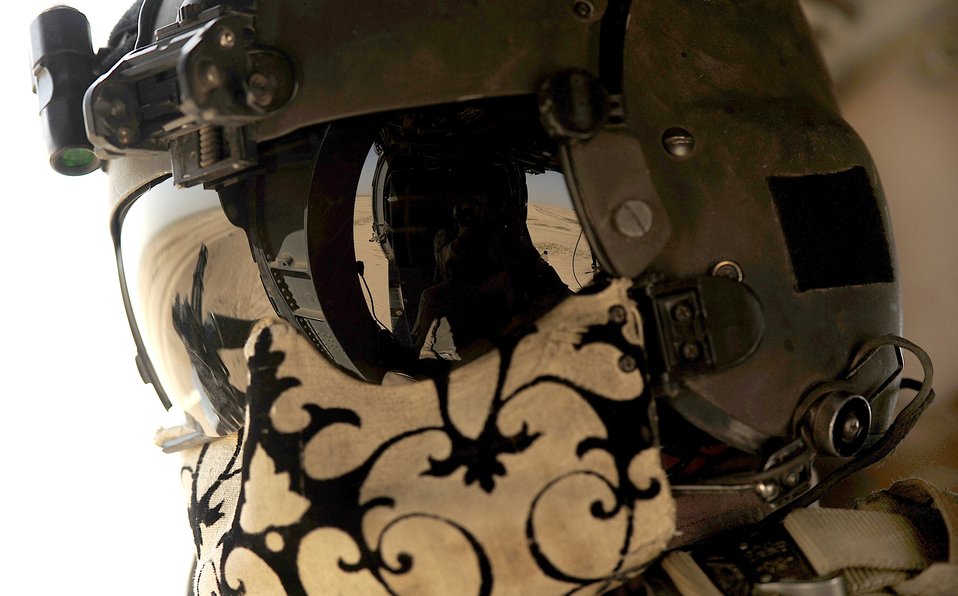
Pave Hawk mission over Iraq

Staff Sgt. Andrew Pena secures his protective gear at his gunner's window during a mission July 12, 2010, at Joint Base Balad, Iraq. Sergeant Pena is an HH-60G Pave Hawk aerial gunner assigned to the 64th Expeditionary Rescue Squadron.